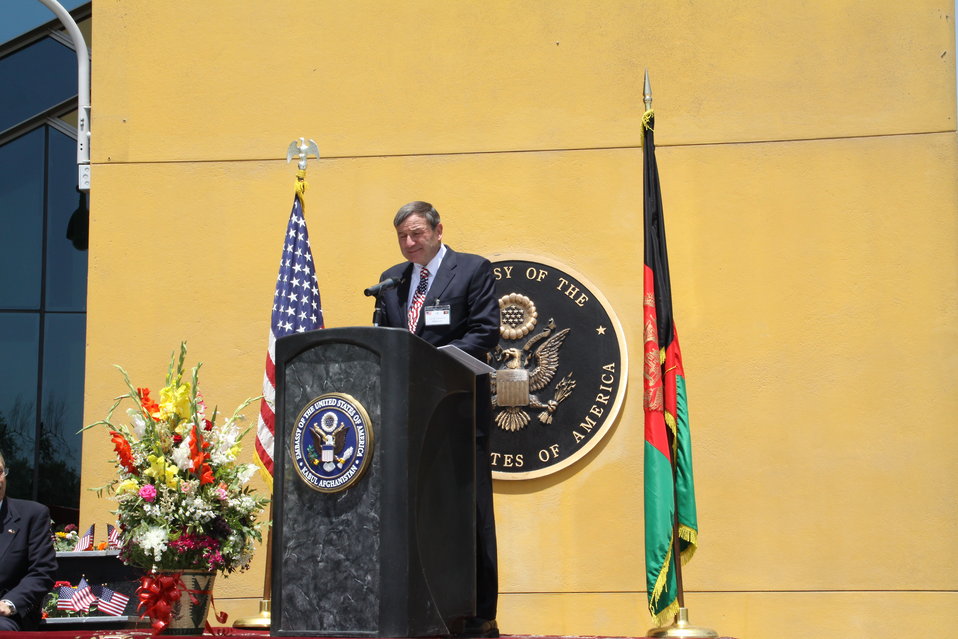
Kabul Official July 4th Celebration